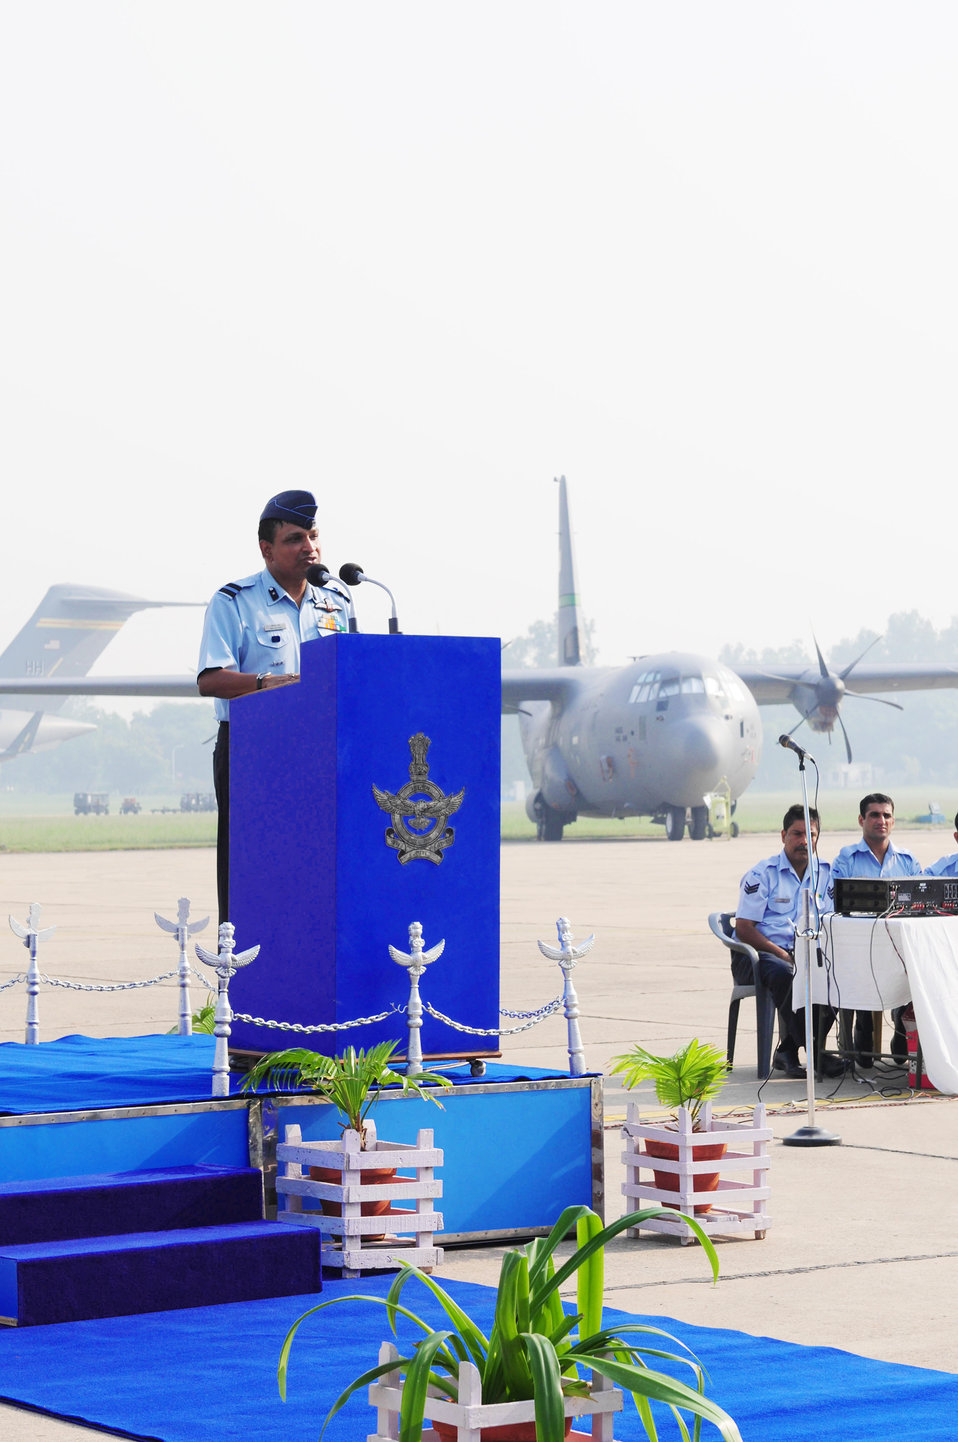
Exercise Cope India begins

Air Commodore Shouvik Roy provides comments during the Cope India opening ceremony Oct. 19, 2009, at Air Force Station Agra, India. More than 150 U.S. Air Force and Army personnel are participating in Cope India, a United States and India airlift exercise that provides training for humanitarian assistance and disaster relief operations. Air Commodore Roy is from the Indian air force.